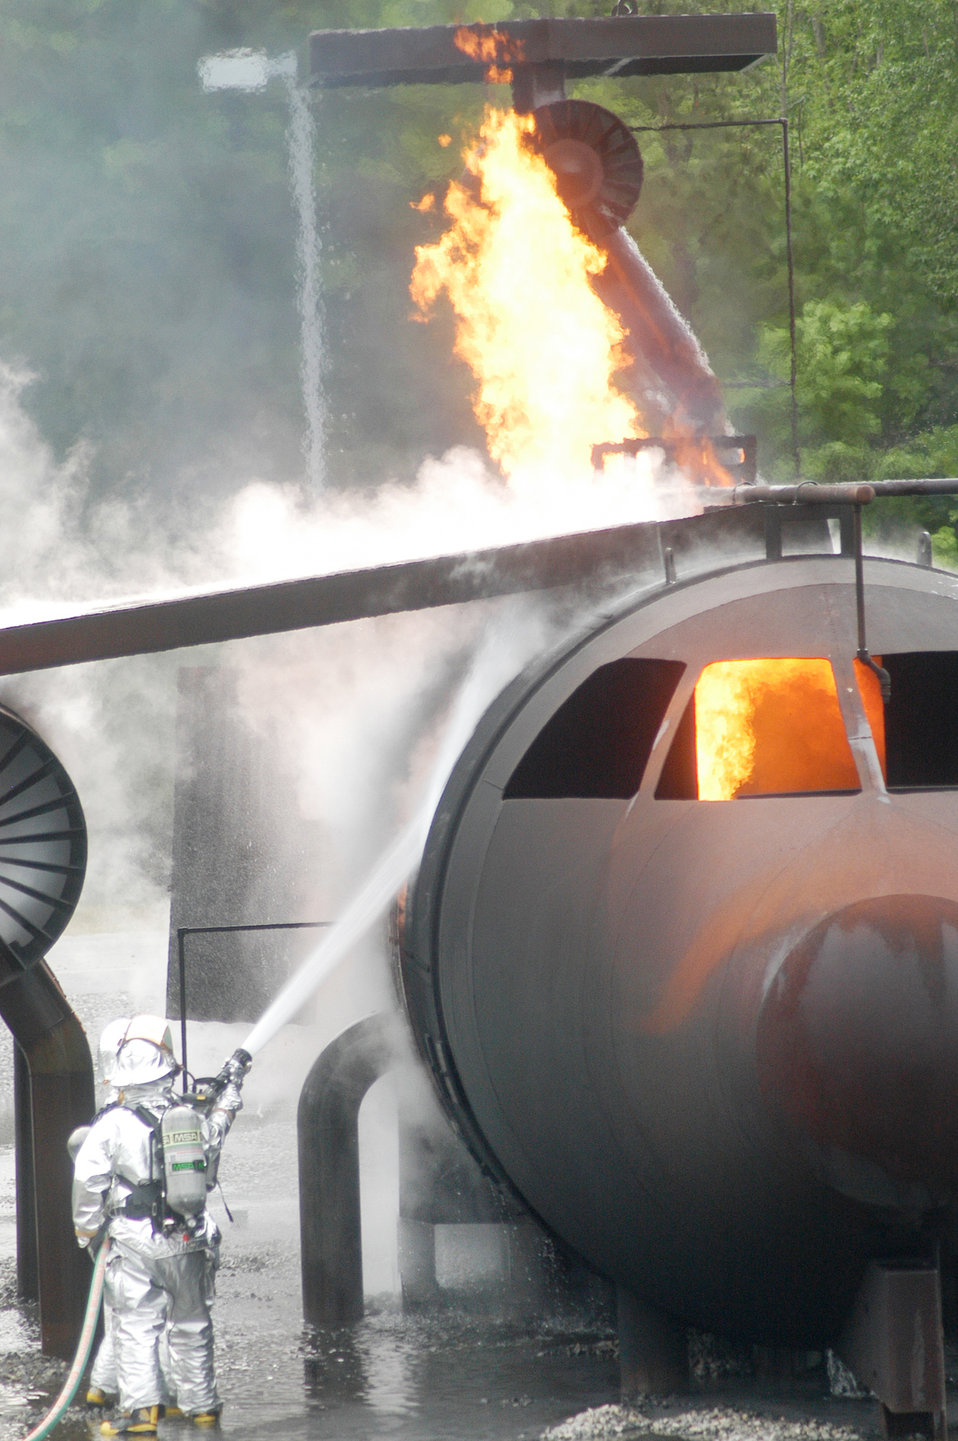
Having a hot time

Firefighters attack a fire during aircraft live fire training April 19, 2010, at Robins Air Force Base, Ga.